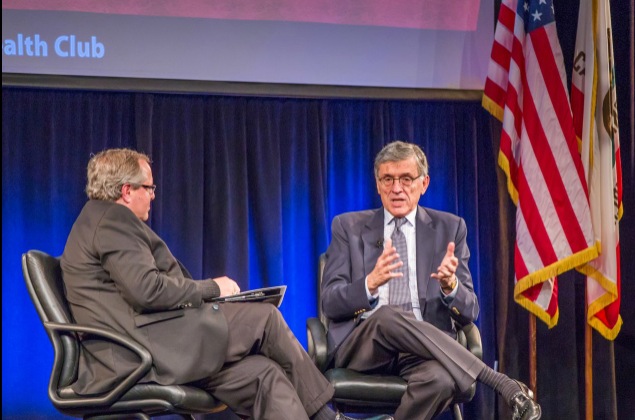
1.10.14 Computer History Museum

1.10.14 Chairman Wheeler giving remarks at the Computer History Museum in Oakland, California. He discussed networks, innovation & economic growth.